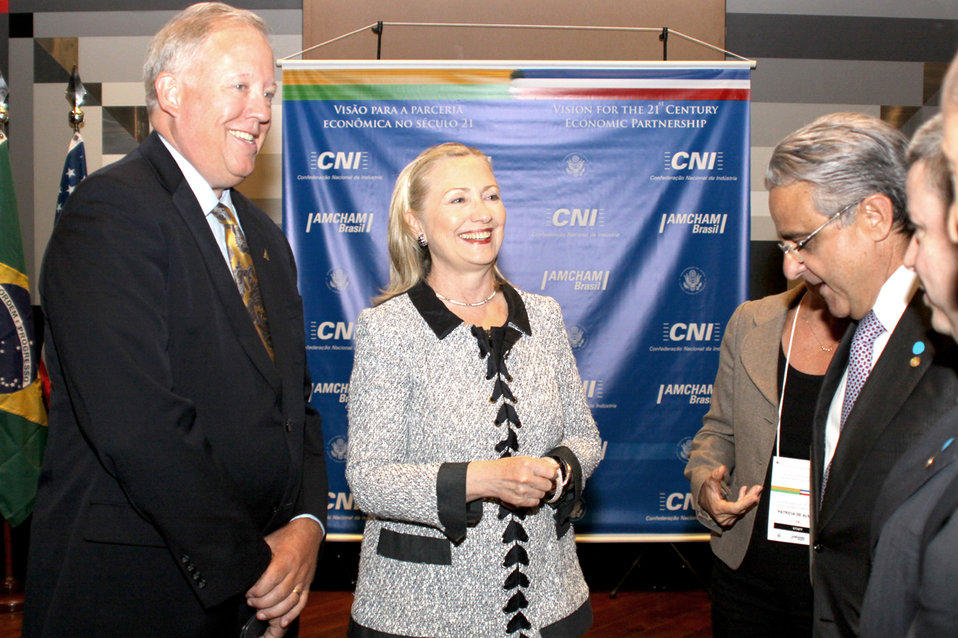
Secretary Clinton and Ambassador Shannon Speak With Members of the Brazilian Business Community

U.S. Secretary of State Hillary Rodham Clinton, center; with U.S. Ambassador to Brazil Thomas A. Shannon, left; speak with members of the Brazilian business community at the National Council of Industries in Brasilia, Brazil, on April 16, 2012.